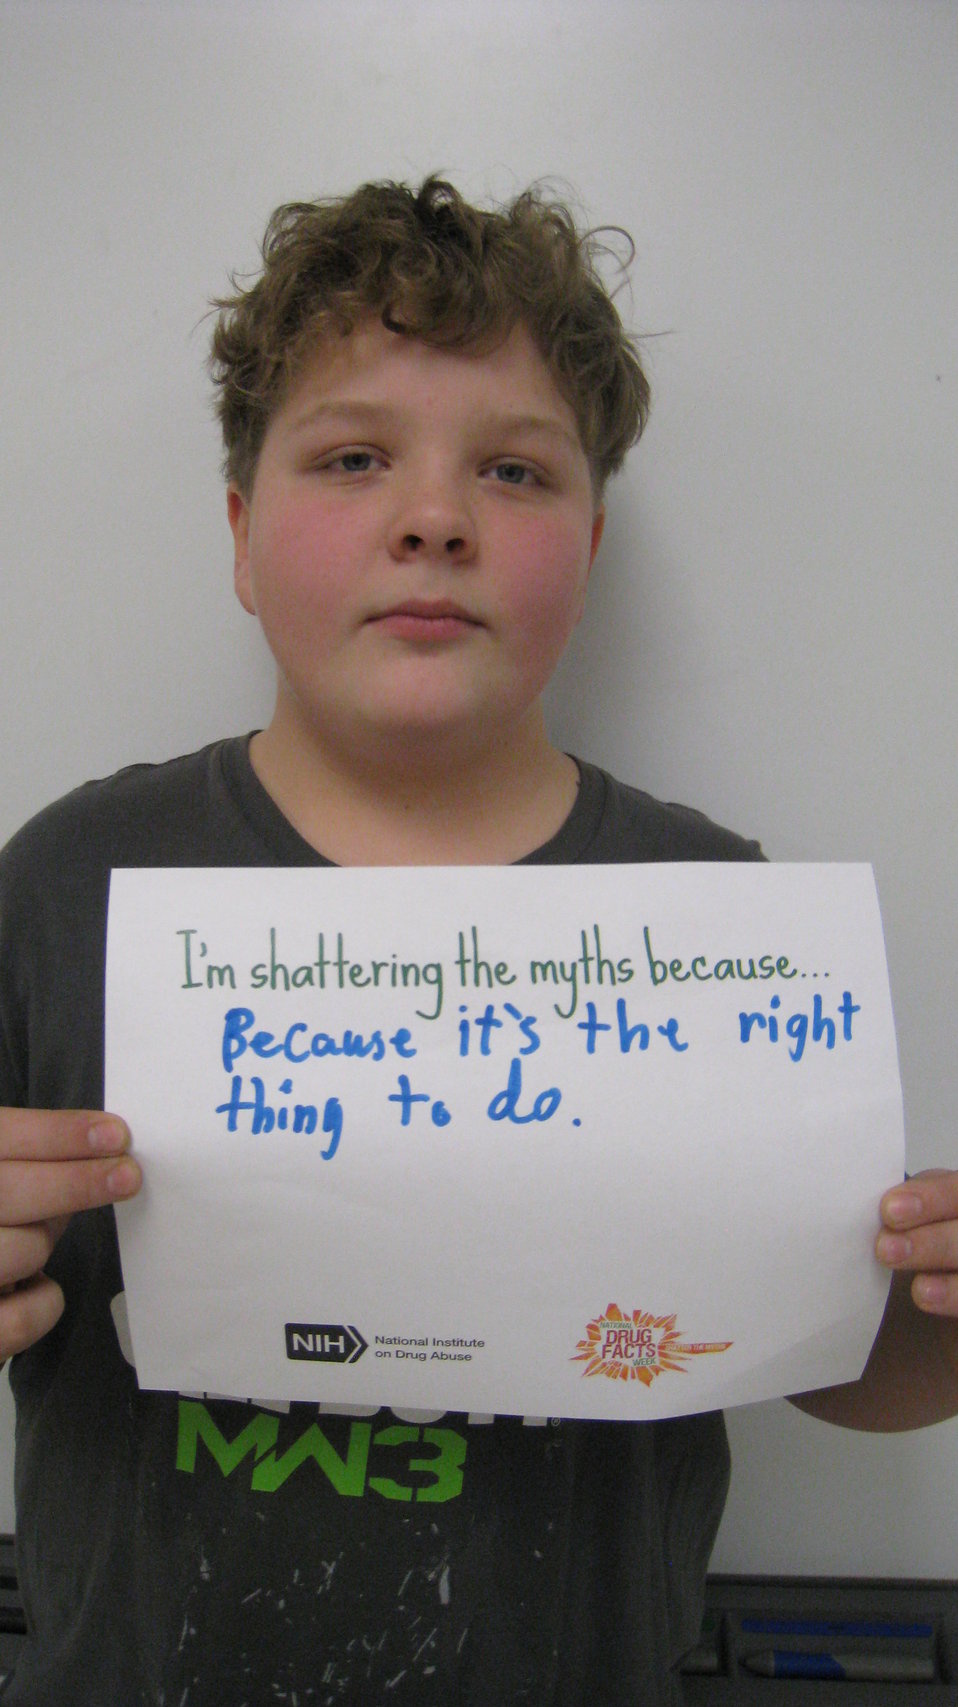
I'm Shattering the Myths Because...

Teenagers from the Van Buren County SAFE Coalition's, Youth Leadership Council (YLC) in Keosauqua, Iowa participate in various events during National Drug Facts Week, 2014.